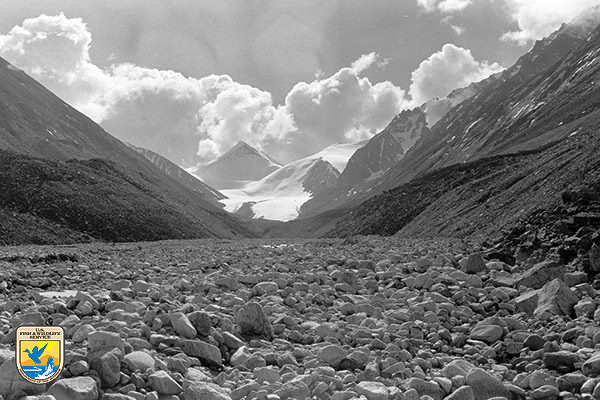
Mountains in the Arctic National Wildlife Refuge